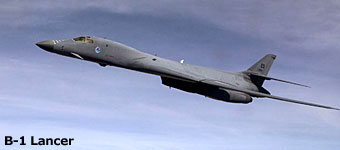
B-1 Lancer aircraft, history spotlight graphic